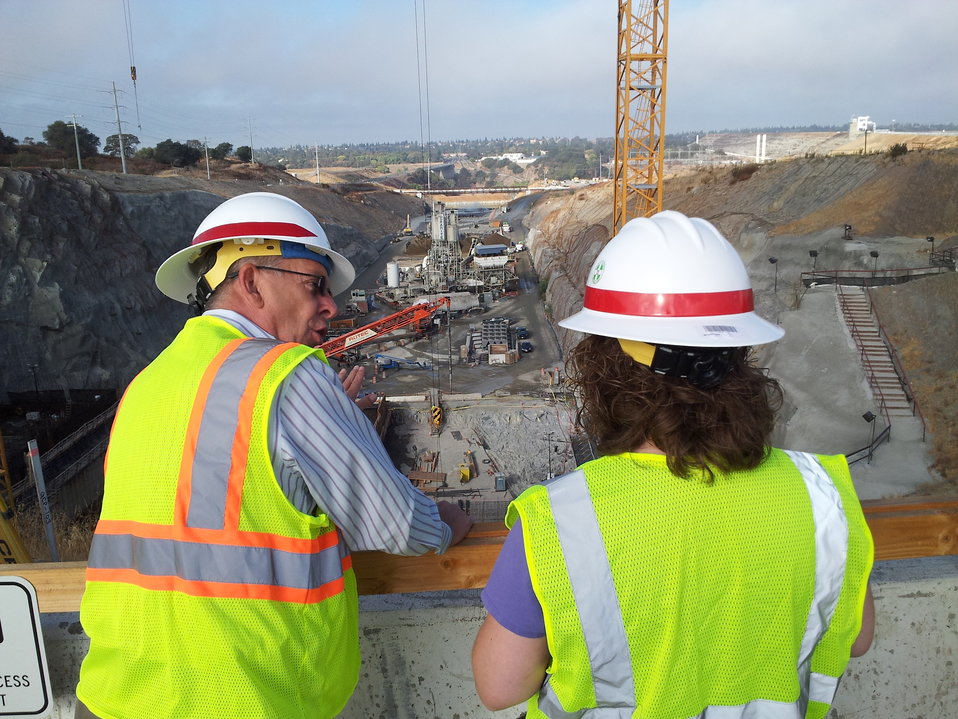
House of Rep. staff member visits Folsom Dam Project

David Thomas (left), director of the Folsom Dam auxiliary spillway project for the U.S. Army Corps of Engineers Sacramento District, describes the project to Angie Giancarlo, House Appropriations Committee staff member, at the project construction site in Folsom, Calif., Oct. 19, 2012. The Corps, in cooperation with the U.S. Bureau of Reclamation, the Central Valley Flood Protection Board, and the Sacramento Area Flood Control Agency, are building the spillway to improve the safety of the existing dam and reduce flood risk for the greater Sacramento area.